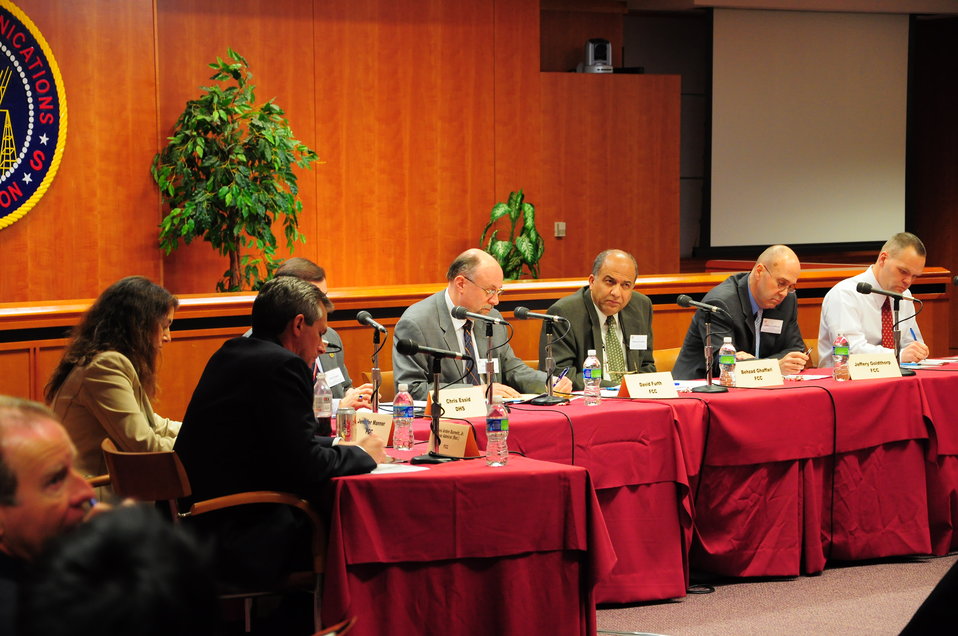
FCC ERIC Public Safety Workshop

ERIC: Public Safety Workshop; Commission Meeting Room; March 02, 2010